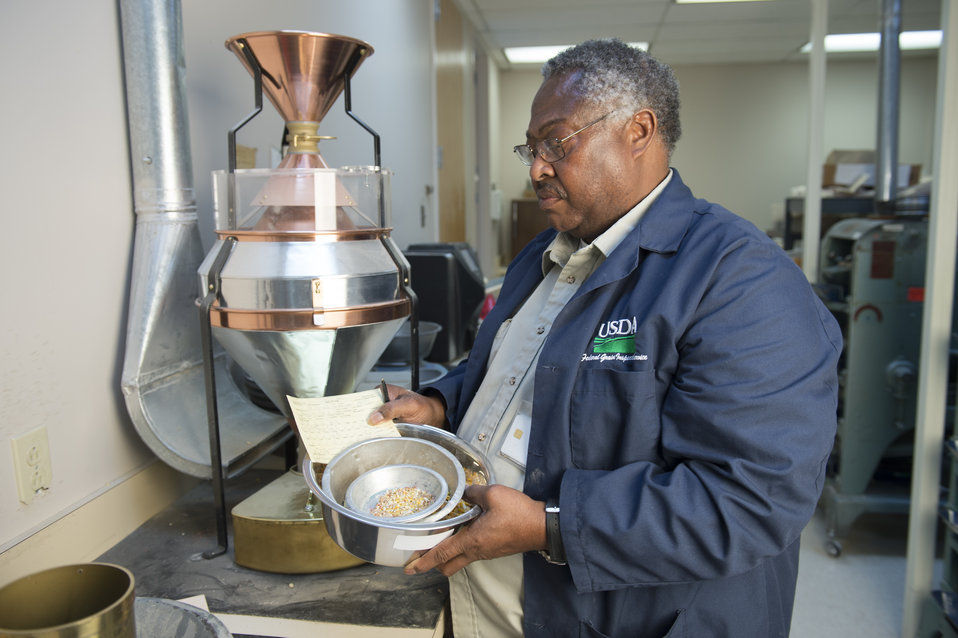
A U.S. Department of Agriculture (USDA) Grain Inspection, Packers and Stockyards Administration (GIPSA) Federal Grain Inspection Service (FGIS) scientist tests corn at the FGIS inspection laboratory in New Orleans, LA on Monday, Nov. 18, 2013.